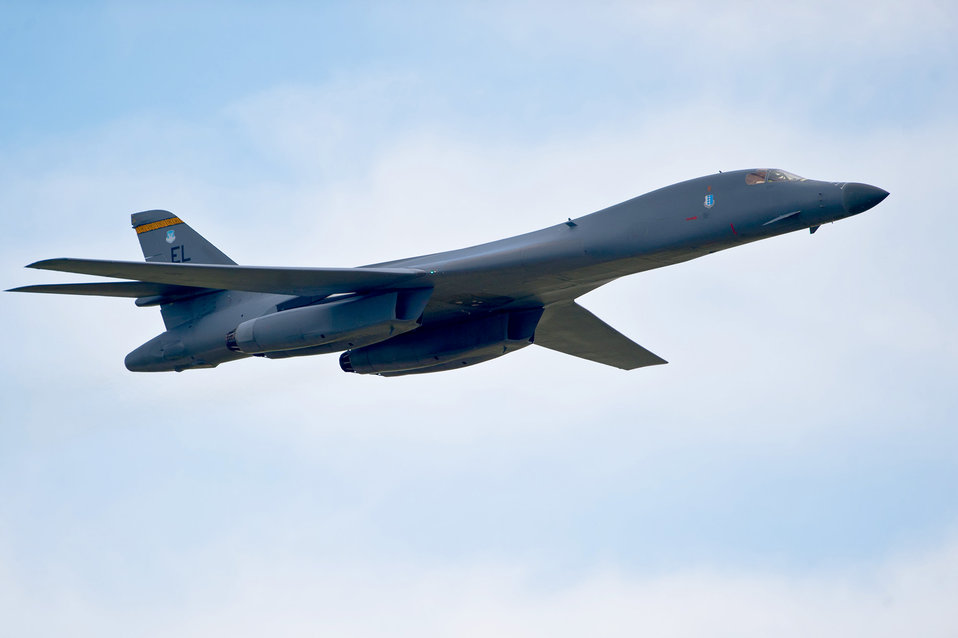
2011 Dakota Thunder air show

A B-1B Lancer flies June 4, 2011, during the 2011 Dakota Thunder air show at Ellsworth Air Force Base, S.D.